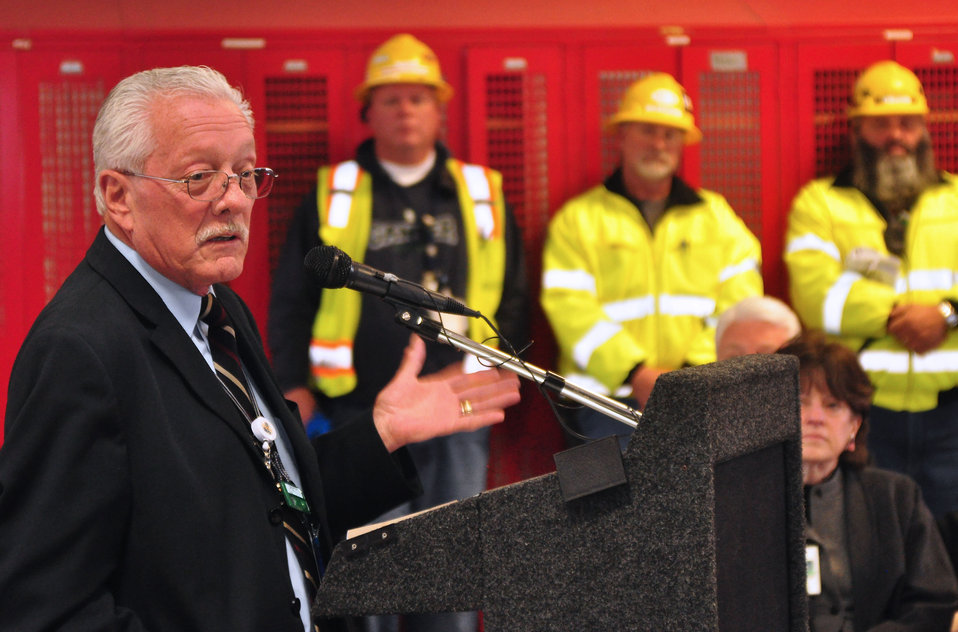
Last Part of K-25 Coming Down Oak Ridge 2013

13-157-1 DOE photo Lynn Freeny 12-19-2013 Leo Sain UCOR President and Project Manager Oak Ridge Tennessee